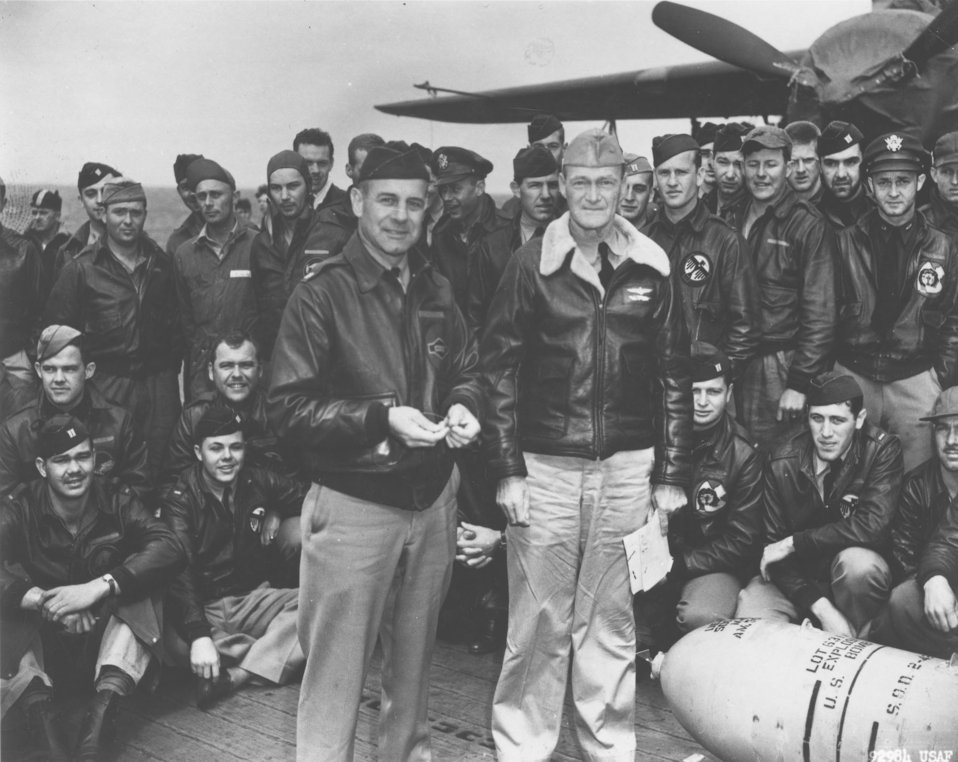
Doolittle Tokyo Raiders

Lt. Col. Jimmy Doolittle accepts a medal from the skipper of the USS Hornet, Capt. Marc A. Mitscher. The medal, once given to a U.S. Navy officer by the Japanese, was wired to a 500-pound bomb for return to Japan